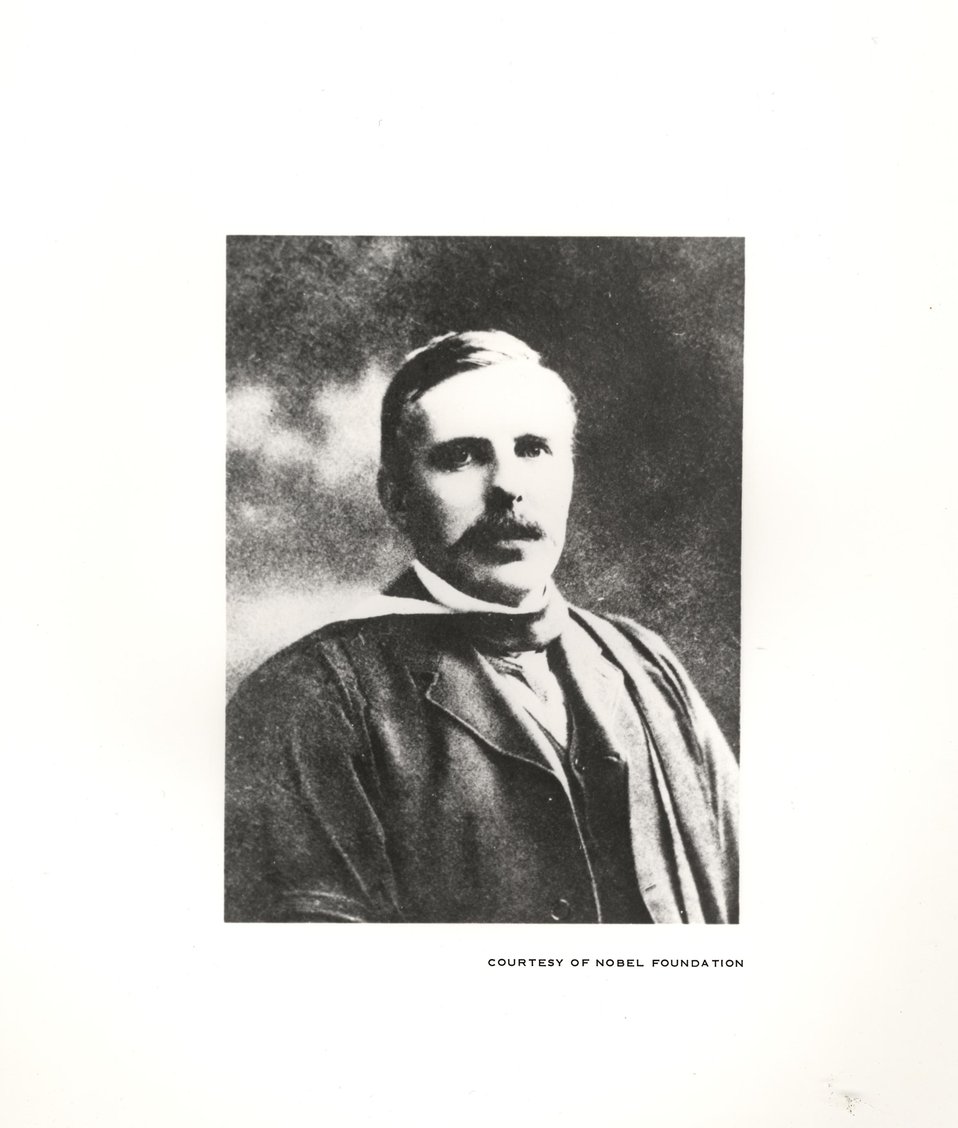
Earnest Rutherford